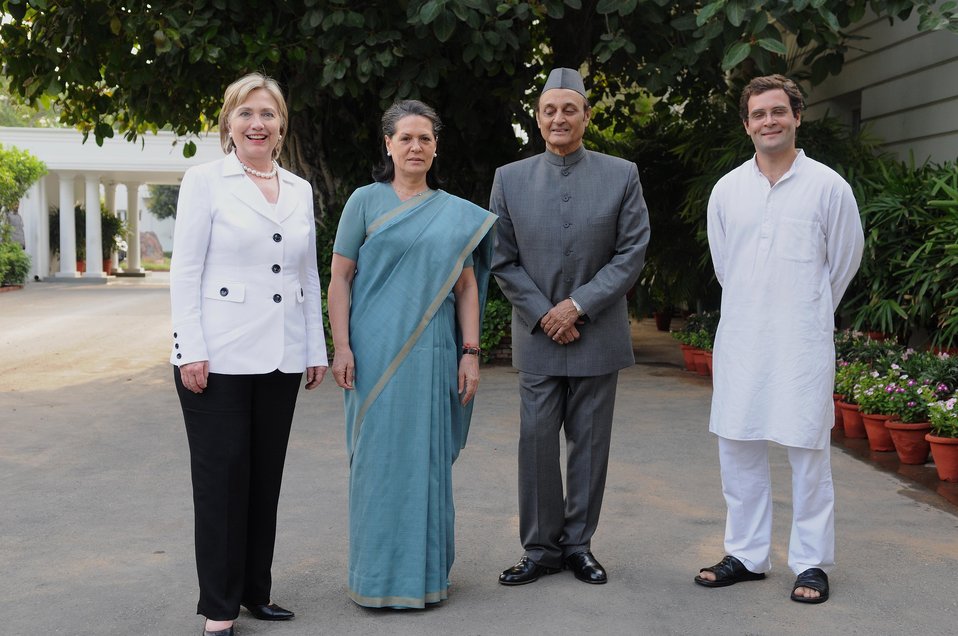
U.S. Secretary of State Hillary Rodham Clinton, President of the Congress Party Sonia Gandhi, former Union Minister Karan Singh and All-India Congress Committee General Secretary Rahul Gandhi meet in New Delhi, India July 20, 2009.